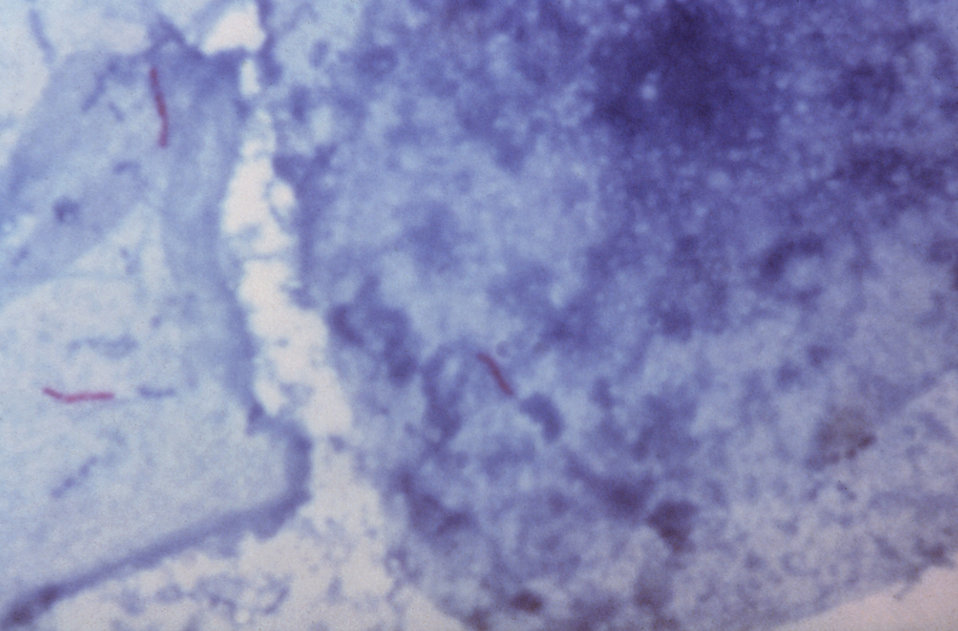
This photomicrograph reveals Mycobacterium tuberculosis bacteria using acid-fast Ziehl-Neelsen stain; Magnified 1000X.